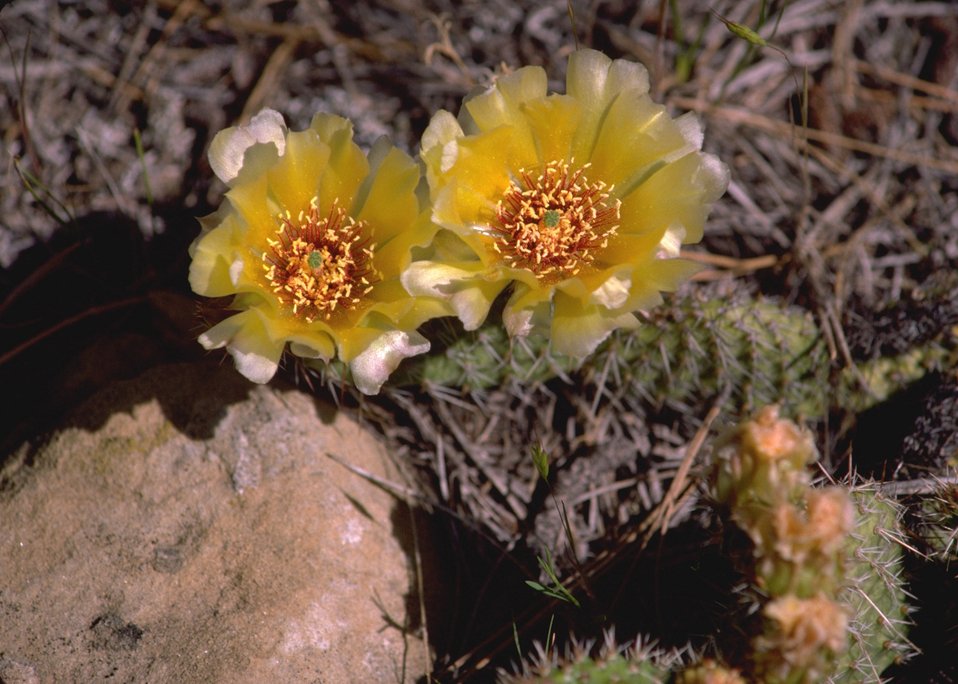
Prickley pear cactus flower.